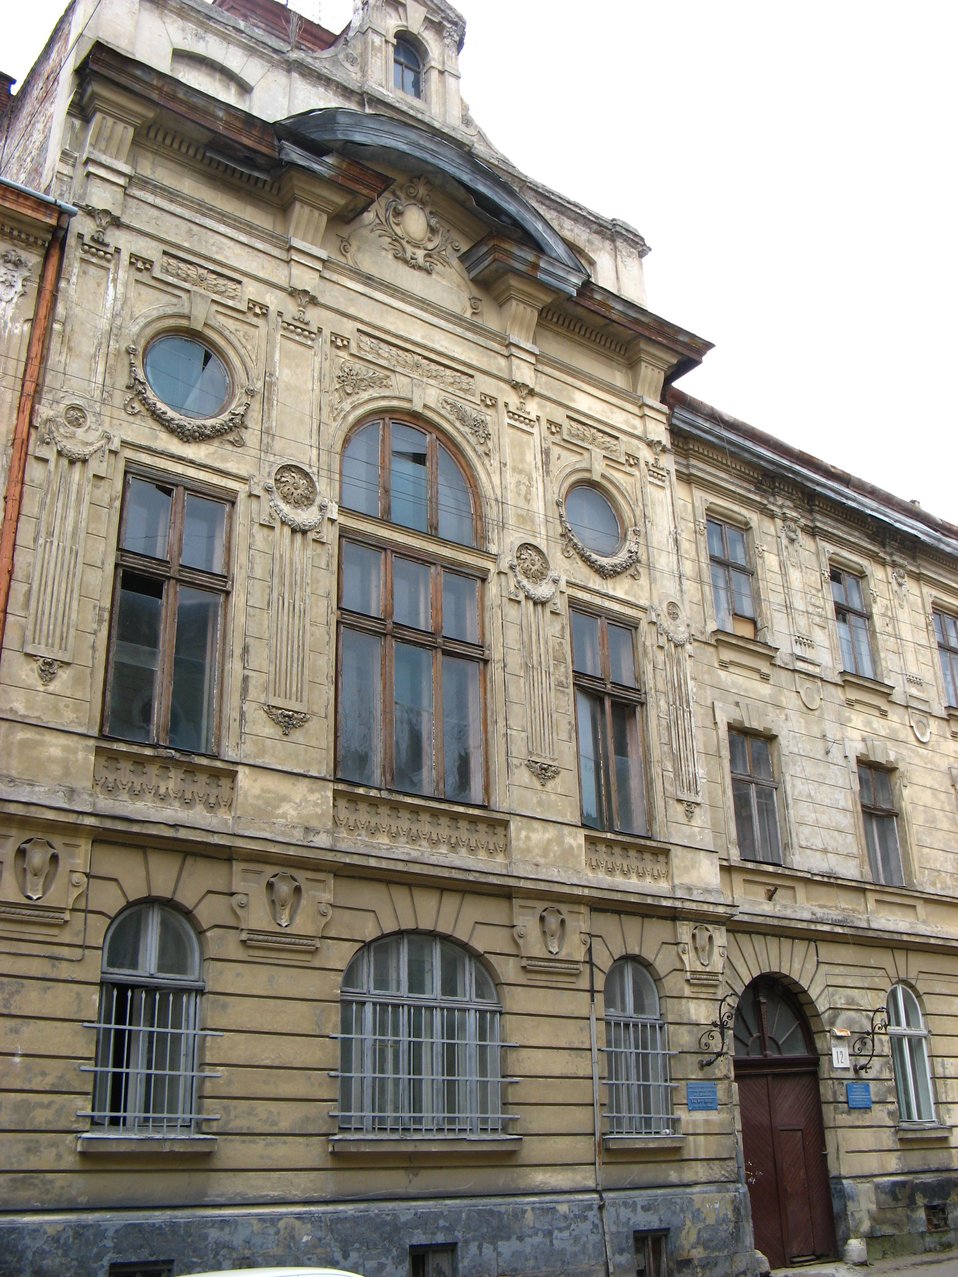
Українська: 12, Шолом-Алейхема вул. (Львів)